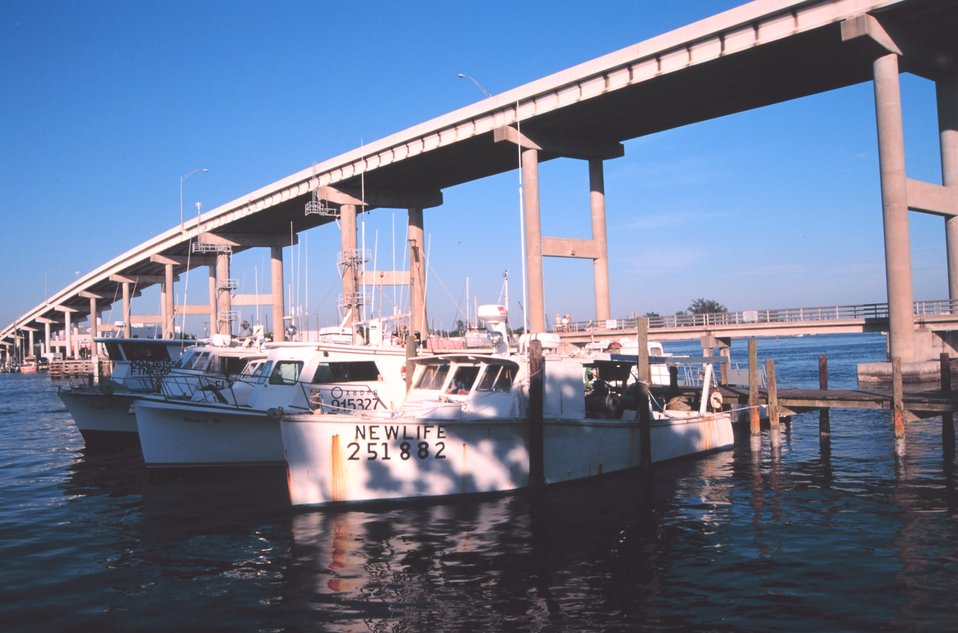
Shrimp trawlers at Snug Harbor along the Caloosahatchee River